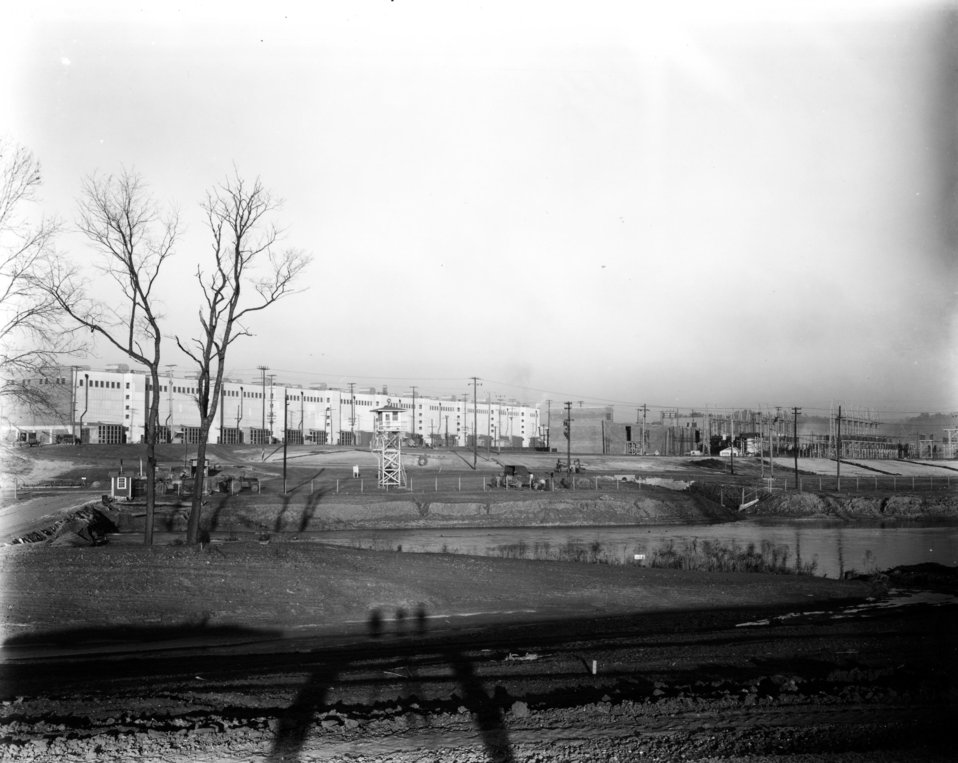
K-27 at Oak Ridge